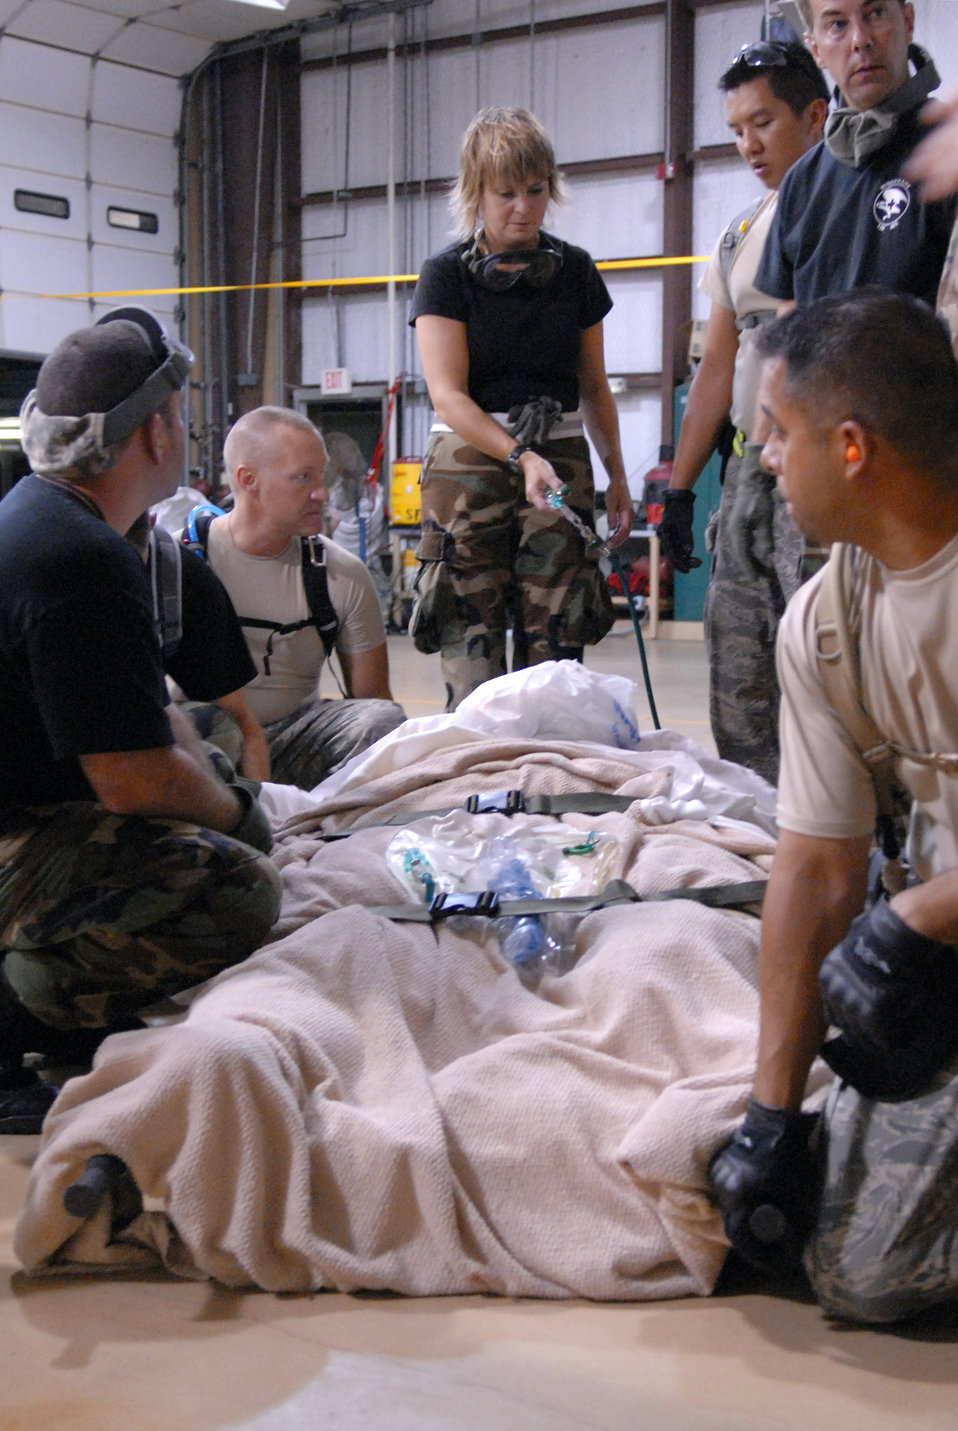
Airman evacuate patients from Beaumont

Airmen load hospital patients onto a C-130 aircraft Sept. 12 at the airport in Beaumont, Texas, for a flight to Lackland Air Force Base in San Antonio. These patients are being transported by aircrews from Little Rock AFB, Ark., and medical Airmen from the 908th Aeromedical Evacuation Squadron at Scott AFB, Ill., in preparation for Hurricane Ike's landfall in southern Texas.